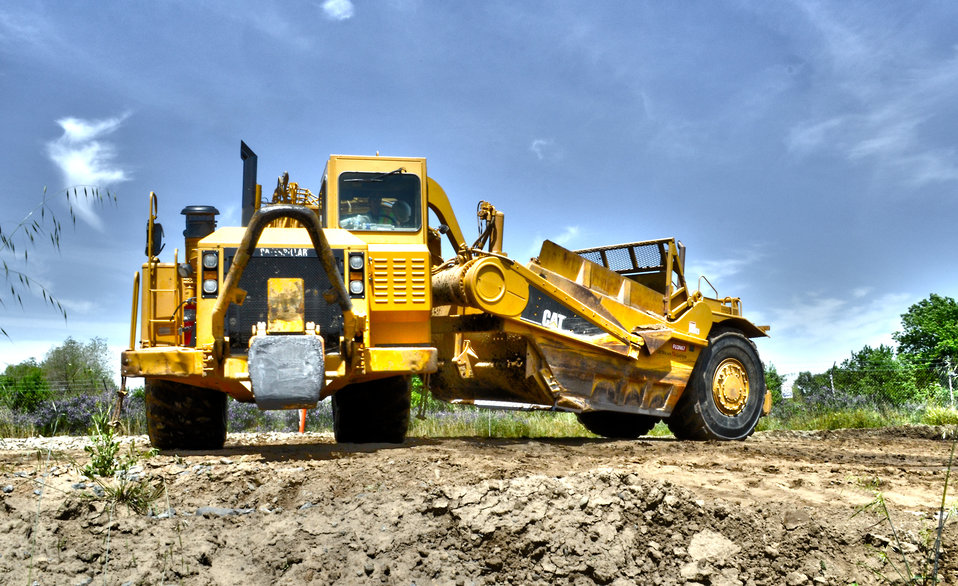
A wheel tractor-scraper attempts a u-turn during levee work April 30, 2012, along South River Road in West Sacramento, Calif. The U.S. Army Corps of Engineers Sacramento District is working to complete a setback levee and install a seepage cutoff wall in the levee’s center, further reducing the city’s flood risk. (U.S. Army photo illustration by Todd Plain/Released)